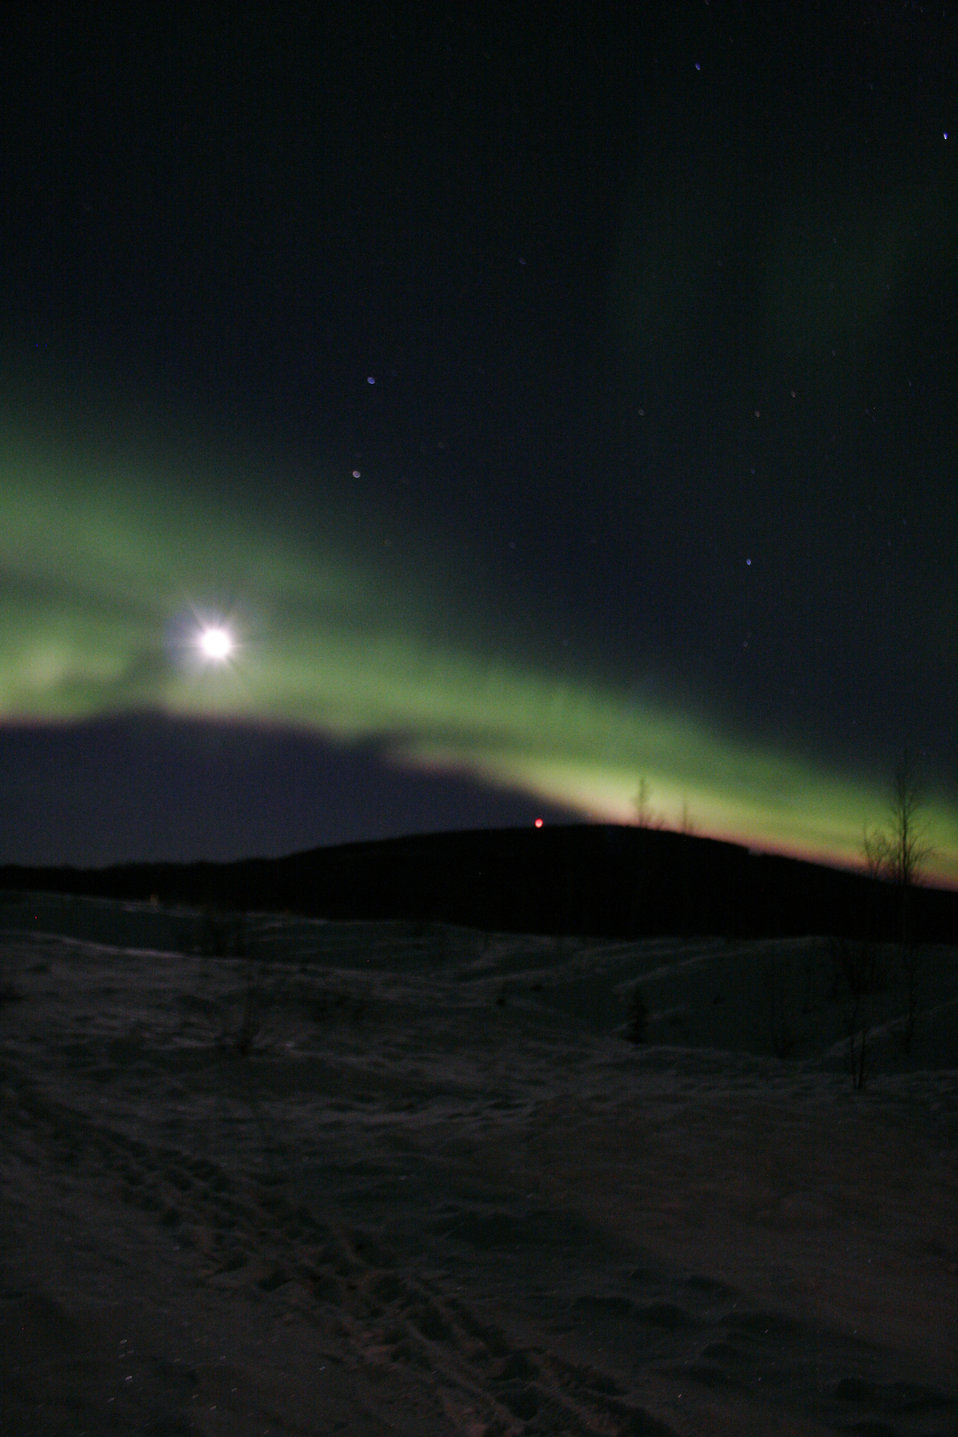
Northern Lights

A view of the Northern Lights